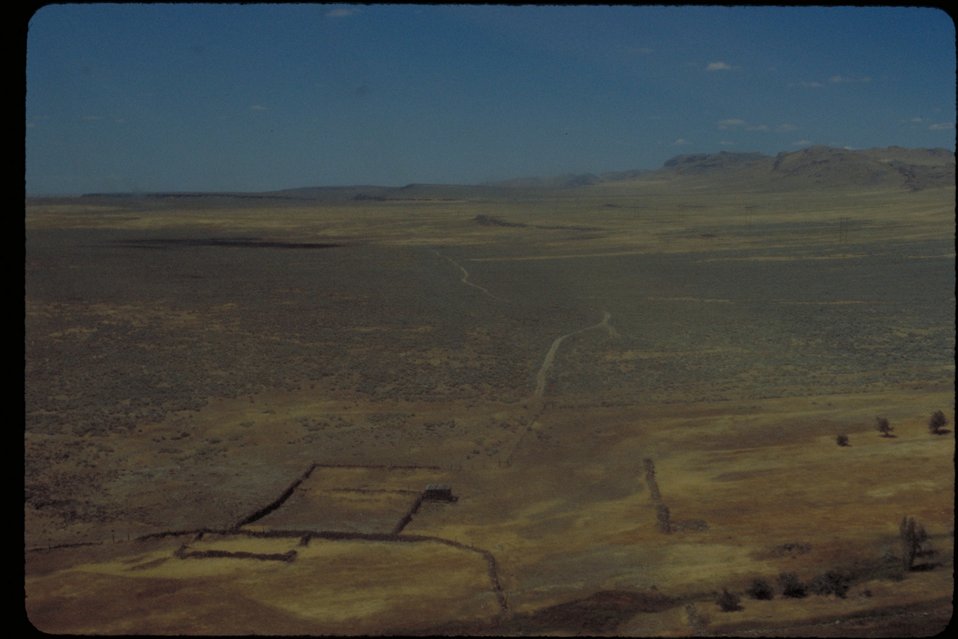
Oregon Trail North of Rattlesnake Creek Lower Snake River District